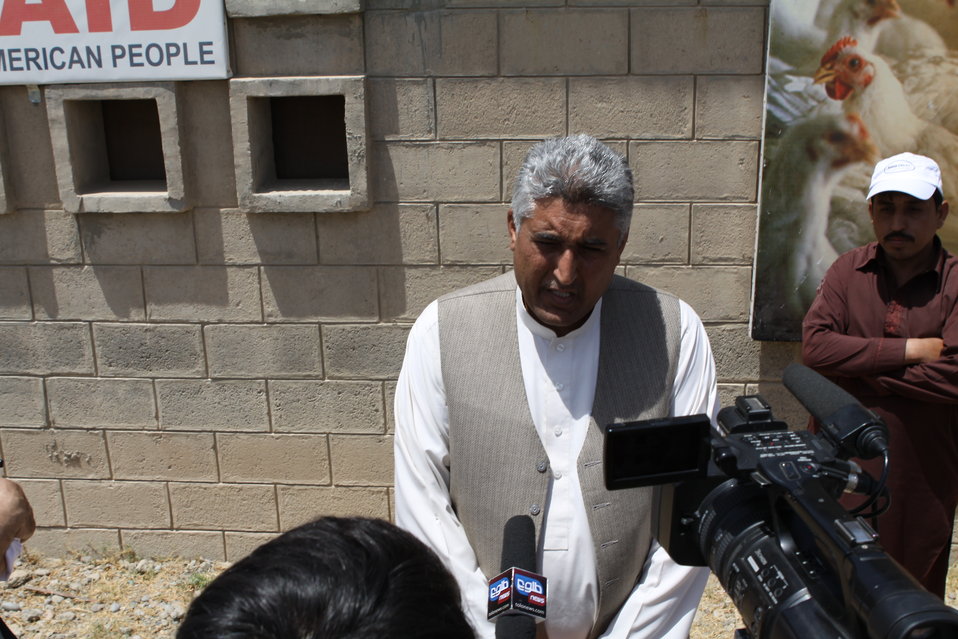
Bolan Poultry Farm